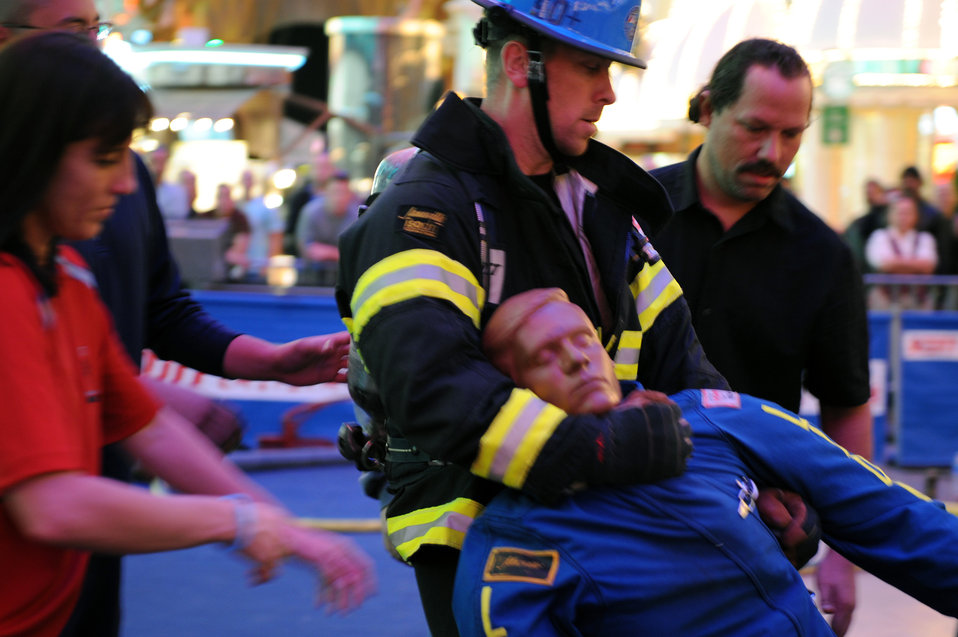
AFA Firefighters

Ken Helgerson